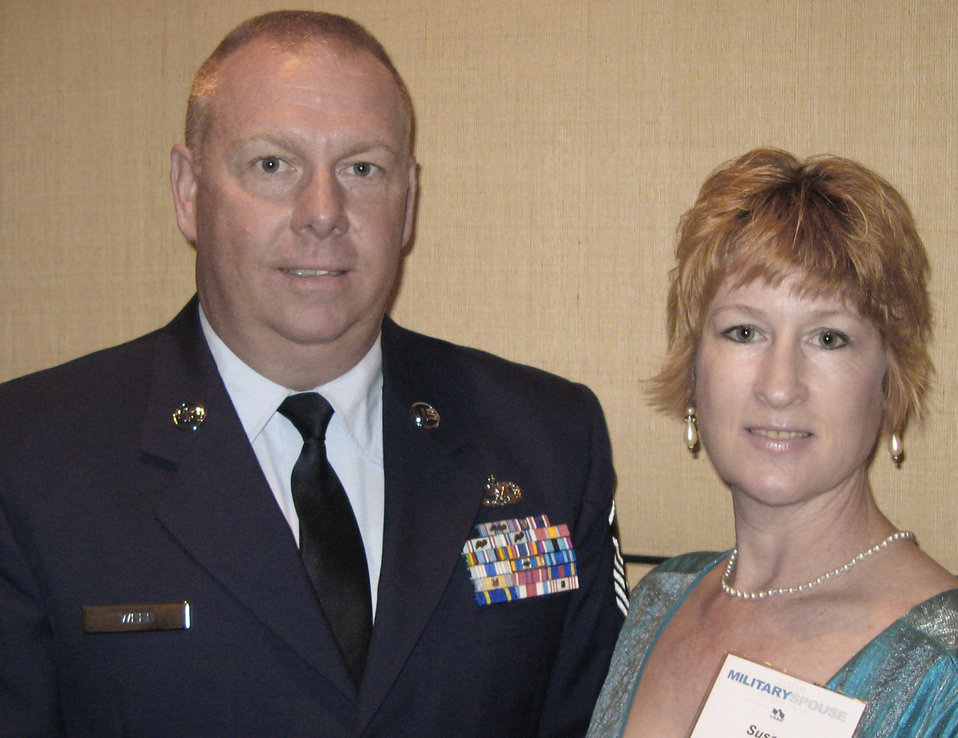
Military spouses receive recognition for valued service

Susan P. Webb, right, and her husband, Air National Guard Master Sgt. Ken Webb, pose for a photograph at the 2009 Military Spouse of the Year awards ceremony in Washington, D.C., May 7.